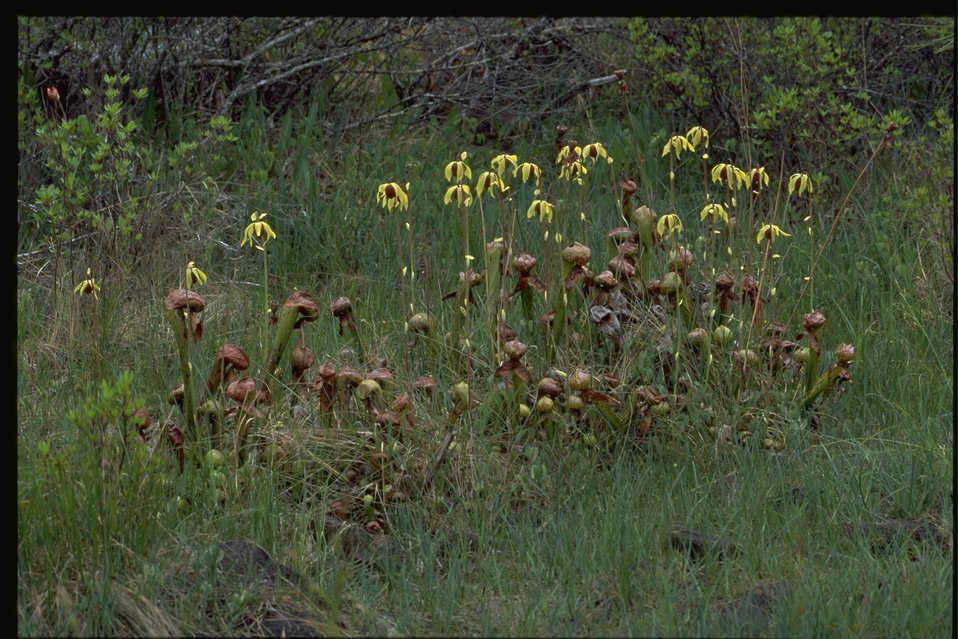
Farshot of Cobra Lily, Darlingtonia californica.